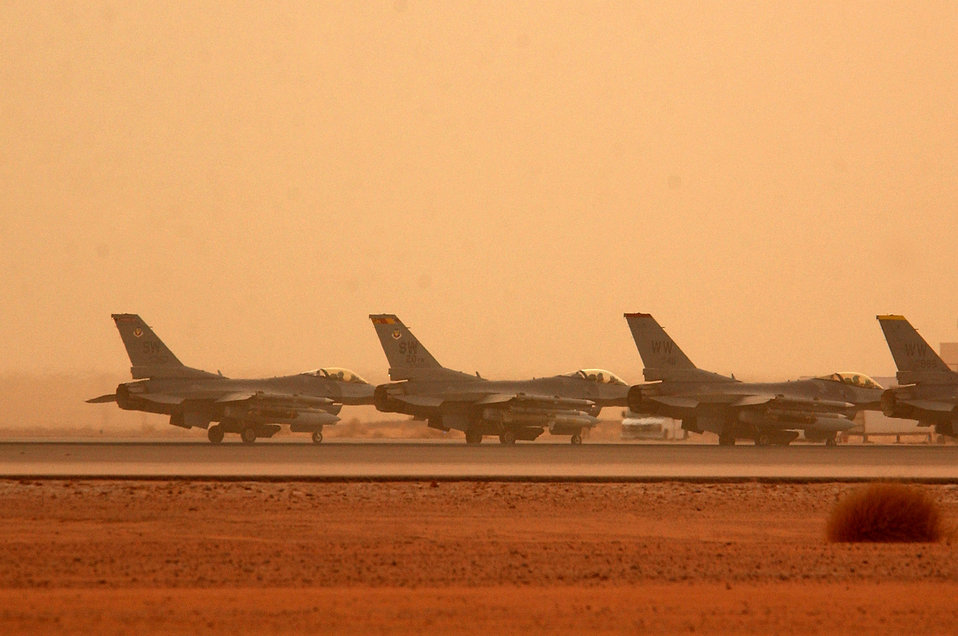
Takeoff line

OPERATION IRAQI FREEDOM -- Four F-16 Fighting Falcons deployed to the 363rd Air Expeditionary Wing wait their turn to takeoff for a mission during a sand storm March 25. Aircraft fly Operation Iraqi Freedom missions around the clock from a forward-deployed location in Southwest Asia.